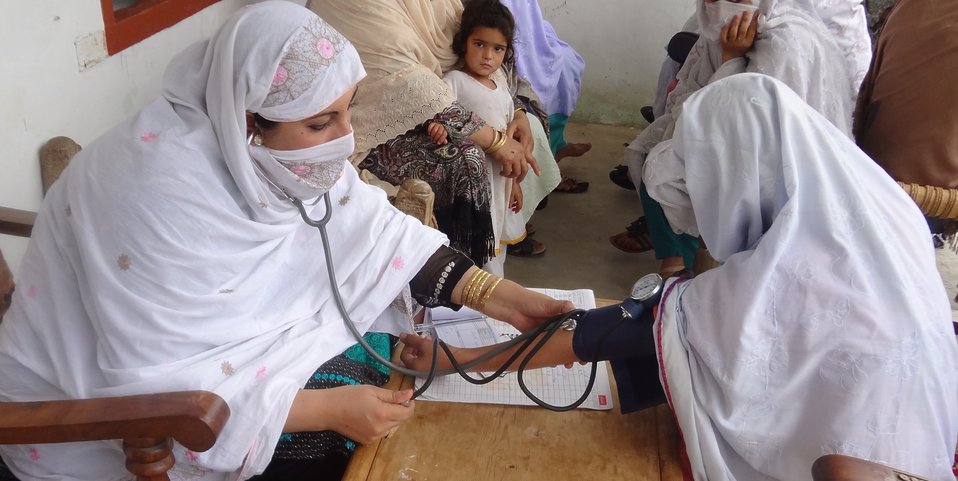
LHV exmining a women at a CMHD

Child & Maternal Health Days are organized in each agency and districts. In these days beneficiaries are provided with basic health services.